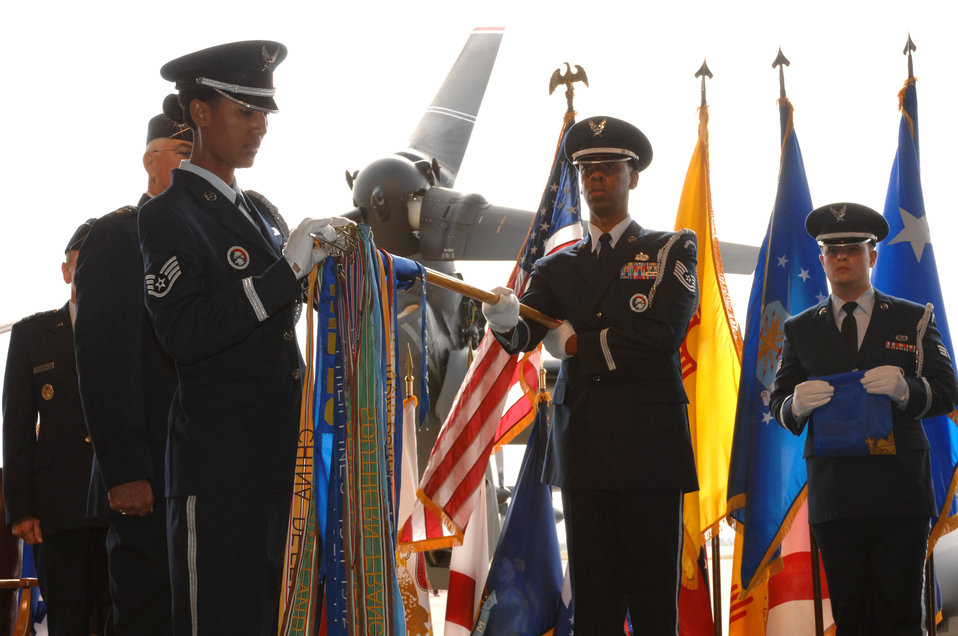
New chapter for Air Force Special Operations begins

Honor Guard members Staff Sgt. Torrie McCutcheon (left) and Tech. Sgt. Rodney Barner remove the 27th Fighter Wing flag from the base guidon during the redesignation and change-of-command ceremony held Oct. 1 at Cannon Air Force Base, N.M. The flag was replaced by the new 27th Special Operations Wing flag. The unit is now one of two Air Force active-duty special operations wings in the United States.